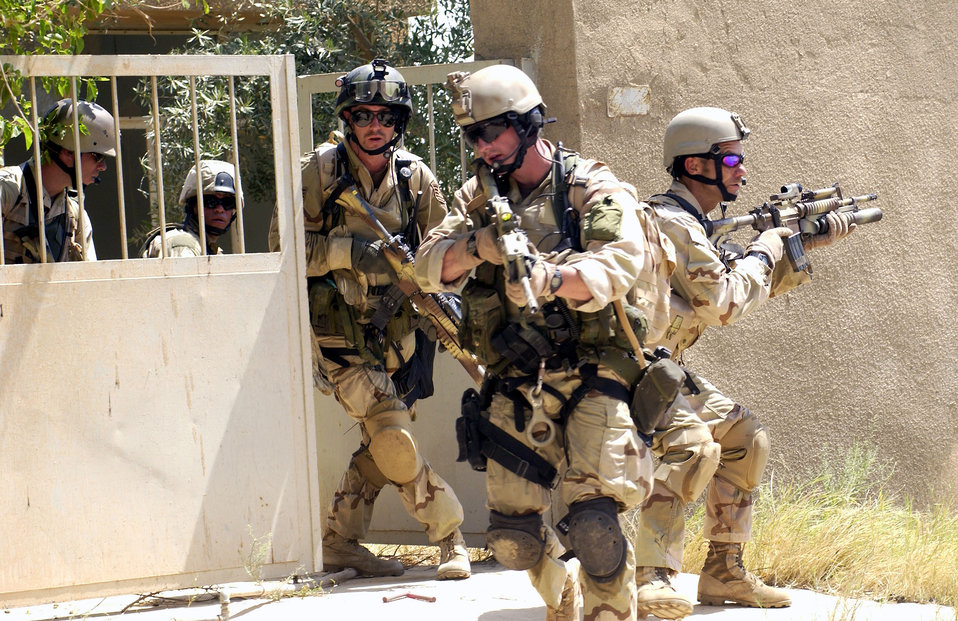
We've got your back

OPERATION IRAQI FREEDOM -- A pararescue team conducts an urban ground exercise in Iraq. The team is assigned to Baghdad International Airport.